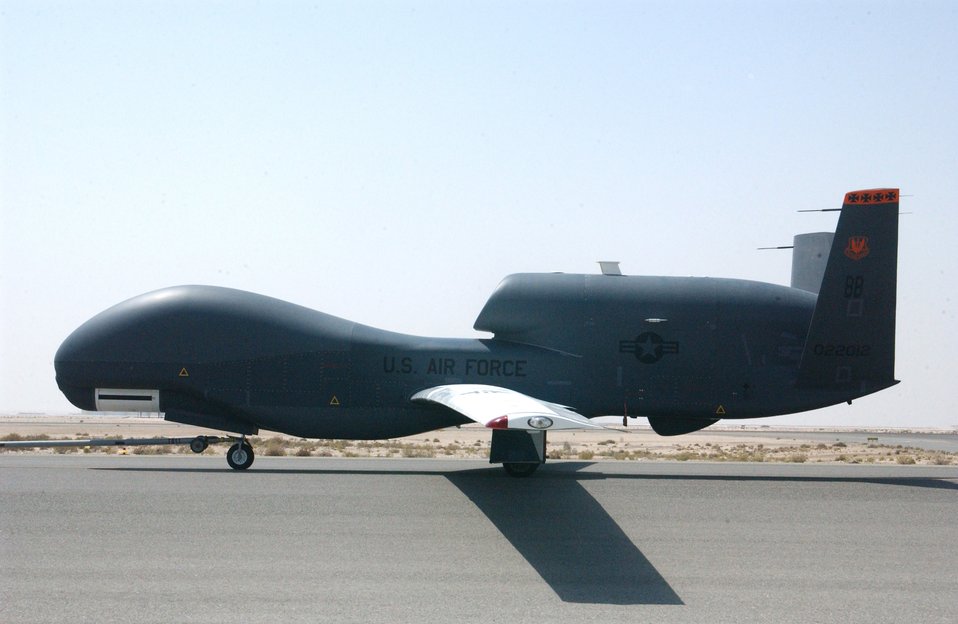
Global Hawk, global mission

A Global Hawk unmanned aircraft system is towed back to its hangar following a mission Oct. 3 at a deployed location in Southwest Asia. Once mission parameters are programmed into a Global Hawk, the UAS can autonomously taxi, take off, fly, remain on station capturing imagery, return and land. Ground-based operators monitor the UAS's status, and can change navigation and sensor plans during flight as necessary.